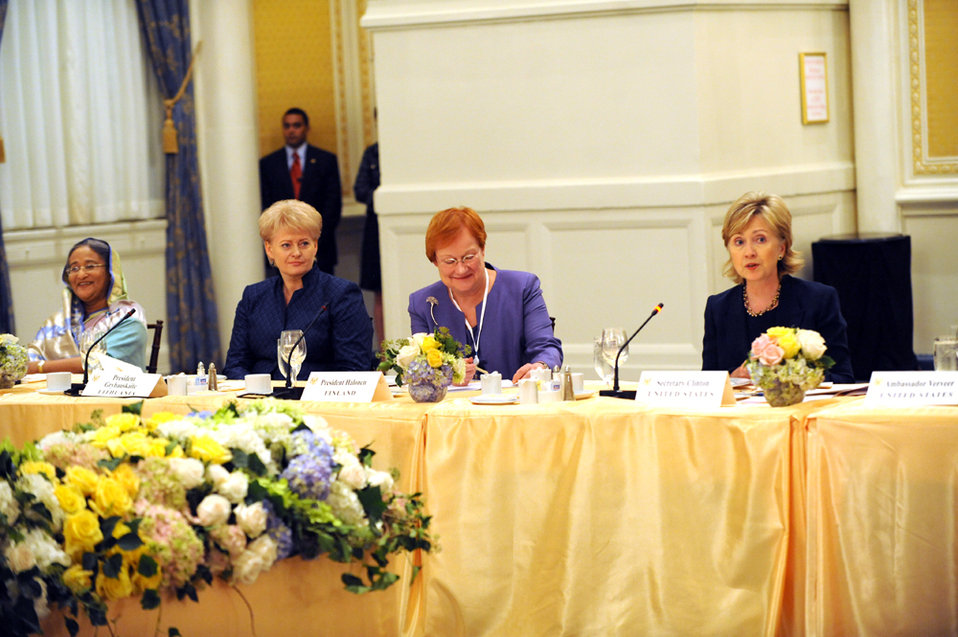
UNGA 2009: Secretary Clinton Holds Women Heads of State and Foreign Ministers Luncheon

U.S. Secretary of State Hillary Rodham Clinton participates in a lunch with women Heads of State and Foreign Minsters at the Waldorf Astoria hotel during the 64th Session of the UN General Assembly in New York City, New York September 24, 2009.